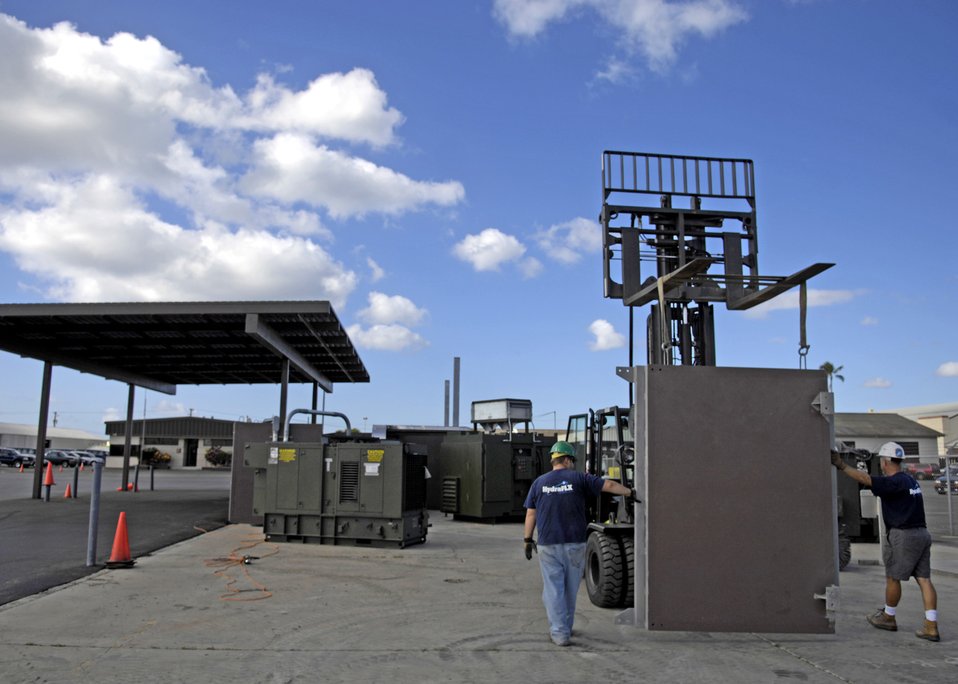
Alternate Energy Source

Members of HydraFLX Systems LLC move a containment wall during the building phase for the HydraFLX System at Hickam Air Force Base, Hawaii Oct. 27, 2006. The HydraFLX System is being tested by the Air Force as an alternate energy source. It will generate ultra-pure H2 (hydrogen) from water in a flexible pressure management process for fueling buses, tow-tractors, vans, sedans and ground support equipment. The system can also be deployed anywhere and operate in hostile theaters without infrastructure or pipelines.